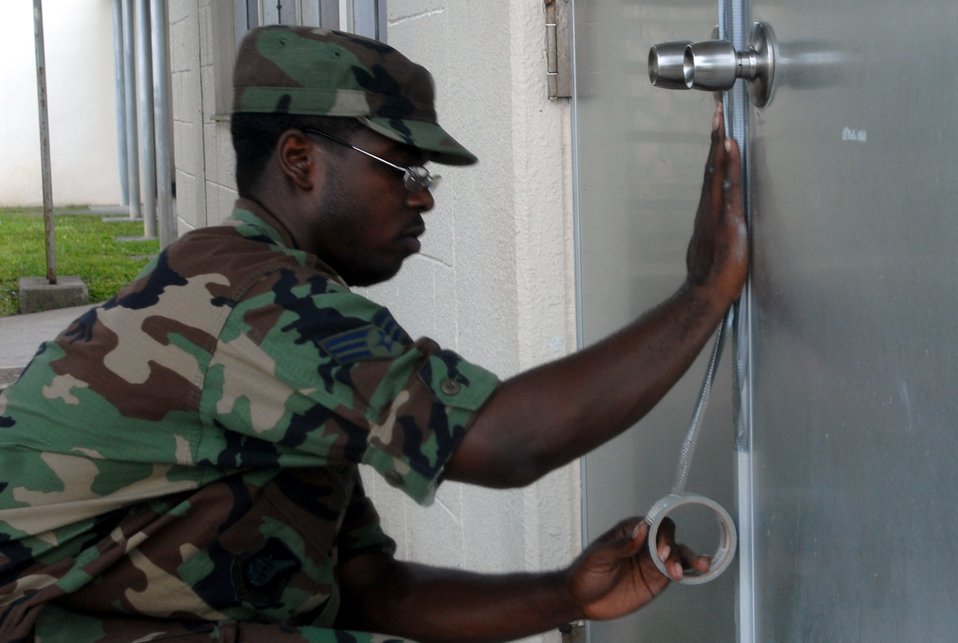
Typhoon Nari heads for Okinawa

Senior Airman Robert Shannon secures the back door of the 18th Communications Squadron building with duct tape to prevent leakage into the building in preparation for Typhoon Nari Sept. 14 at Kadena Air Base, Japan. Base members prepared for the typhoon by moving jets and equipment from the flightline into protective aircraft shelters and evacuated many aircraft to locations throughout the Pacific. The typhoon is scheduled to hit the island the evening of Sept. 14 with 45 knot winds gusting to 65 knots. Airman Shannon is assigned to the 18th CS.